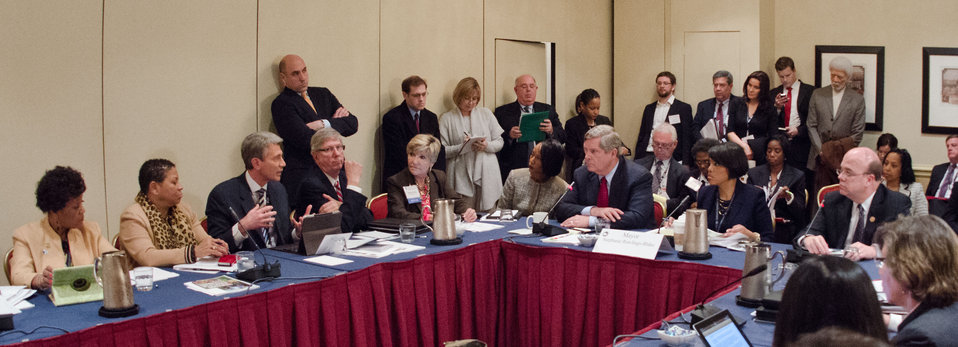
Agriculture Secretary Thomas Vilsack, (at end table with red tie) listens and responds to questions from mayors, during the United States Conference of Mayors 81st Winter Meeting, Food Policy session in Washington D.C., on Thursday, Jan 17, 2013. Some of his responses highlighted the Supplemental Nutrition Assistance Program (SNAP, www.fns.usda.gov), Know your Farmer Know your Food (www.usda.gov/wps/portal/usda/usdahome?navid=KYF COMPASS) and many other ways that rural America makes a difference (www.usda.gov).